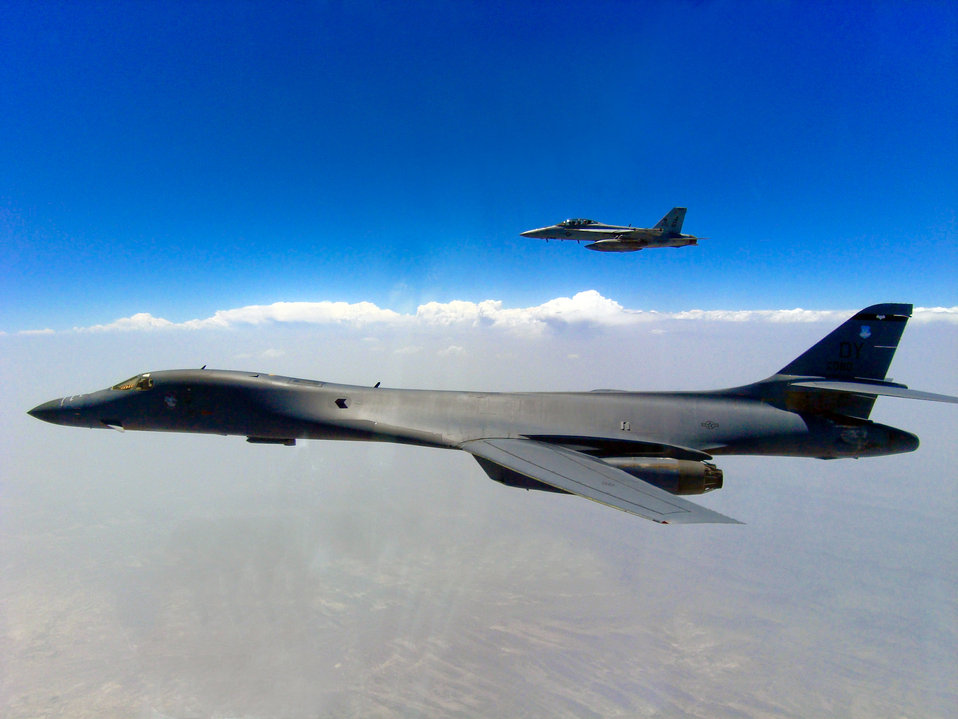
Airpower summary

An F/A-18F Super Hornet flies alongside a B-1B Lancer after a close-air-support mission supporting coalition forces in Afghanistan.